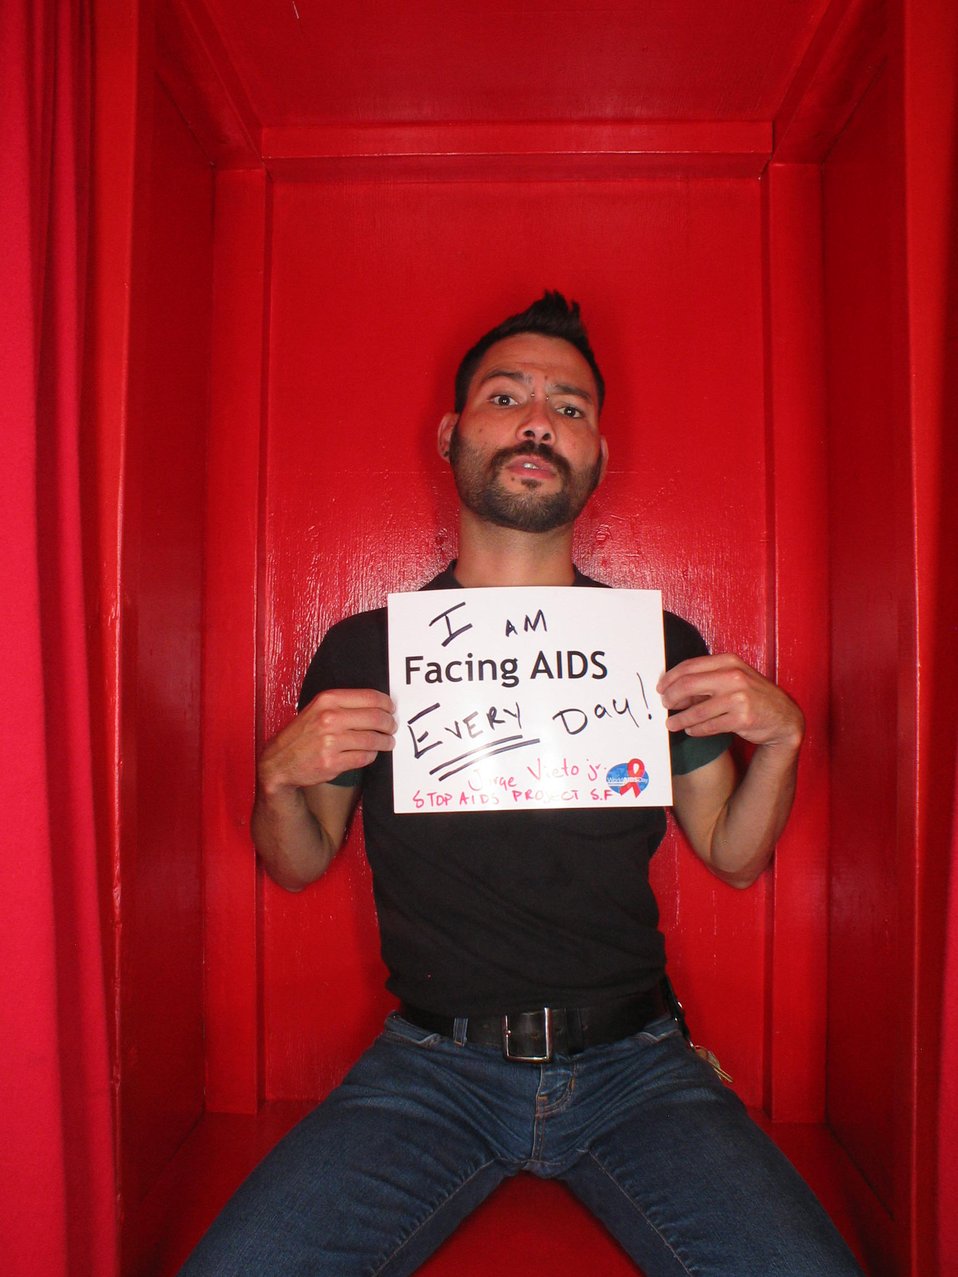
I am Facing AIDS every day!